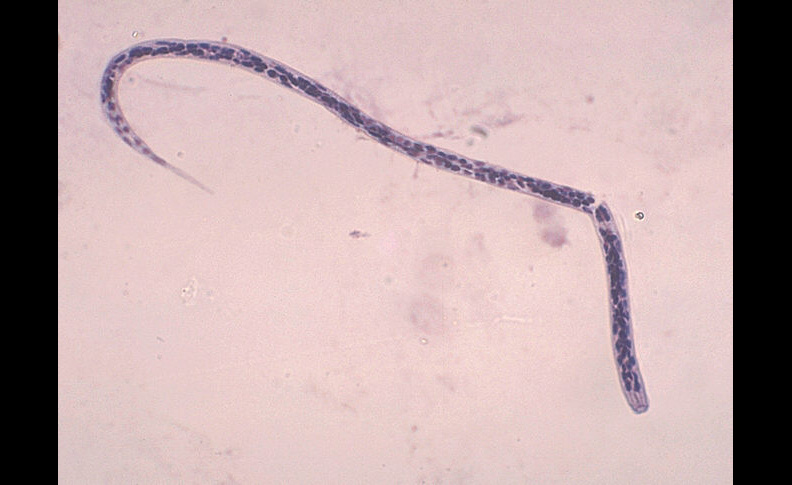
Onchocerca volvulus.